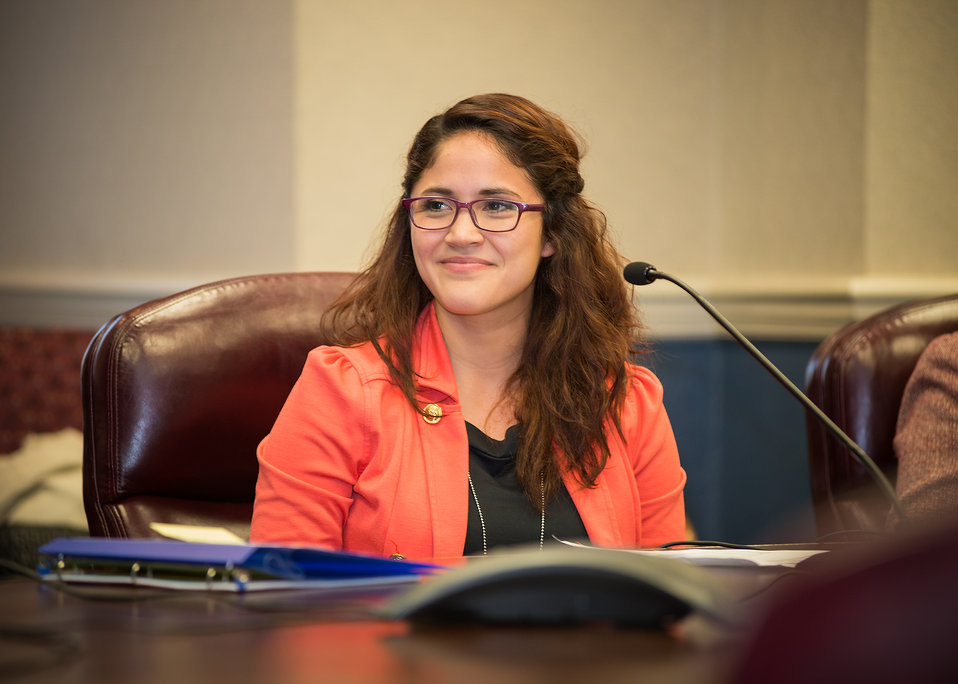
Sandra Largaespada asks a question of Agriculture Deputy Secretary Krysta Harden at the meeting of the Hispanic Association of Colleges and Universities (HACU) National Internship Program Fall 2014 Interns during the Pathways Programs for Students and Recent Graduates to Federal Careers program at the U.S. Department of Agriculture (USDA) on Tuesday, Dec. 3, 2013 in Washington, D.C.